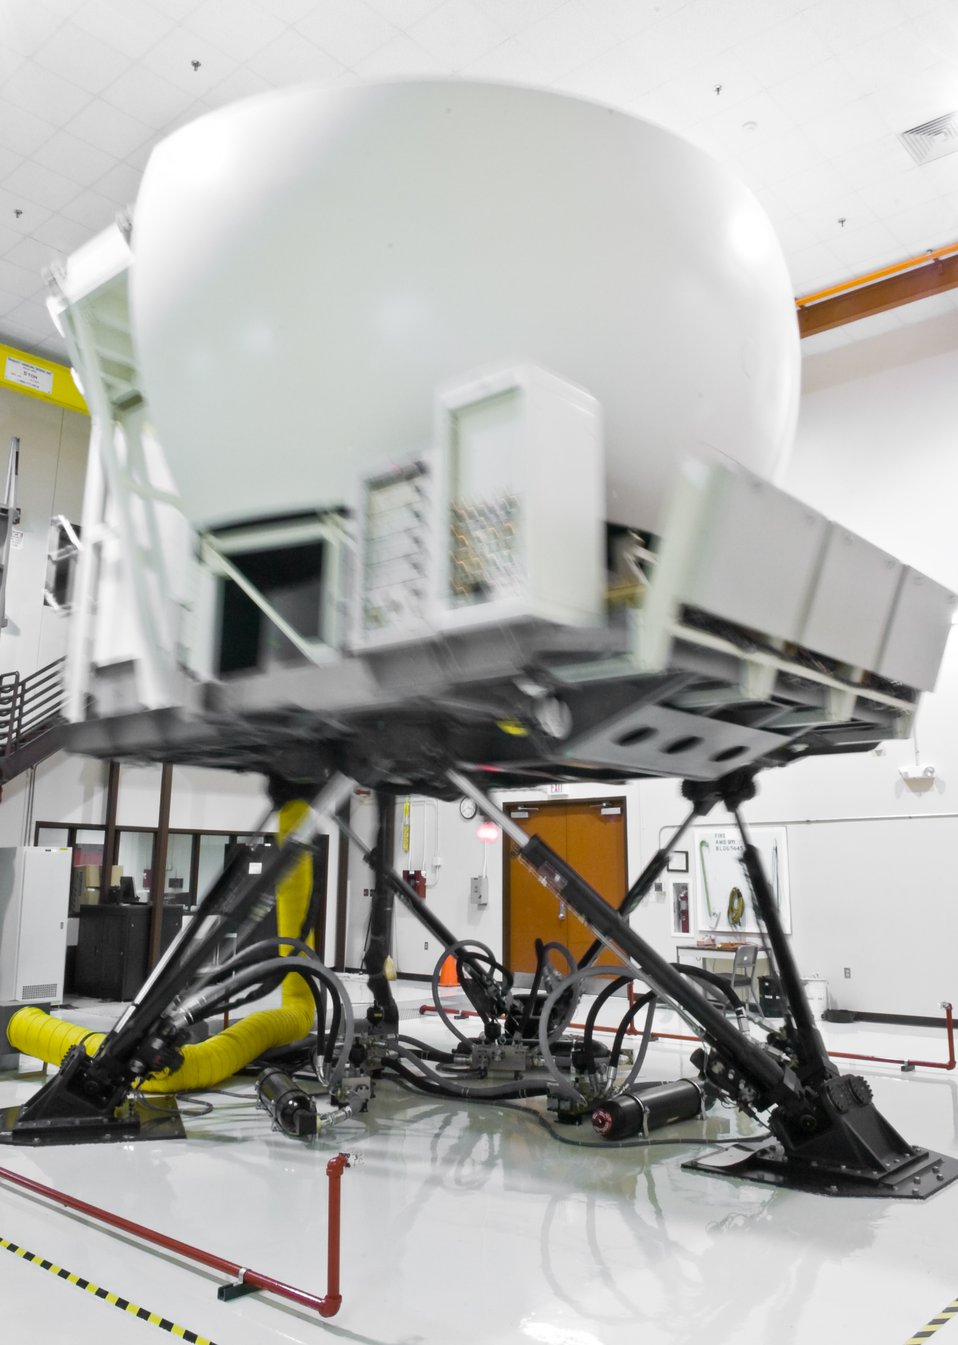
B-52 bomber and simulator

A new dome projection surface fitted on the B-52 Stratofortress simulator at Barksdale Air Force Base, La., provides a more realistic view for aircrews during training. The new hydraulic actuators also provide realistic motion. An actual flight in a B-52 bomber costs approximately $16,000 per hour, compared to the $400 per hour to operate the simulator. However, though cost effective, not all training can be simulated.